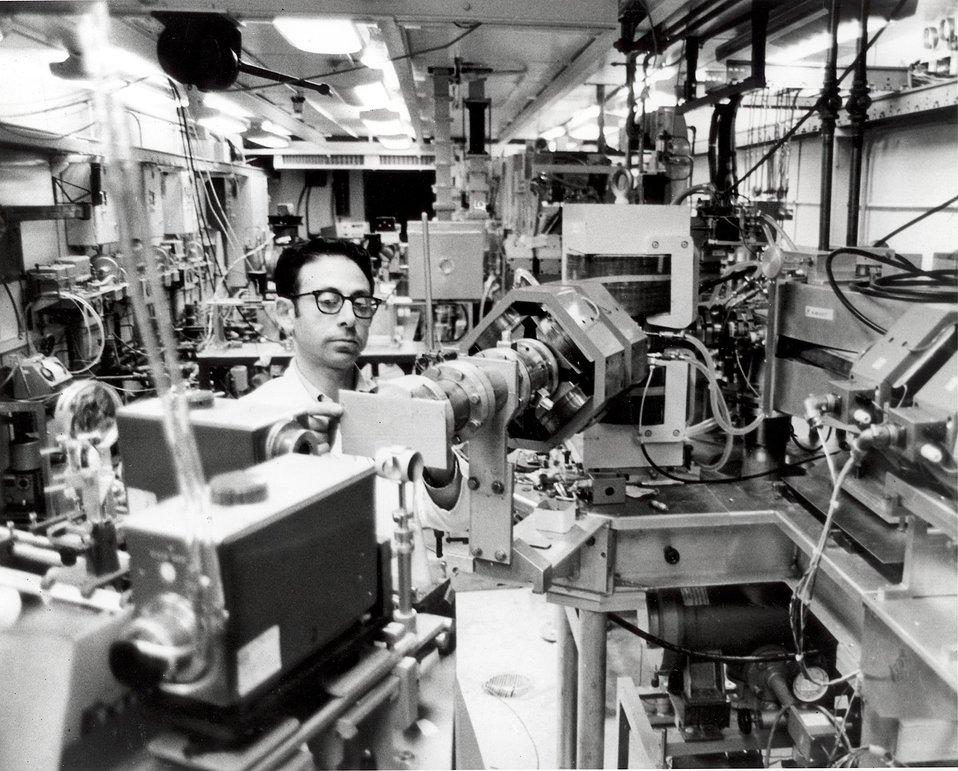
A new linear accelerator recently installed in the Chemistry Division of Argonne. This 22-million volt instrument is being used for experiments in pulsed radiolysis.
c.1970